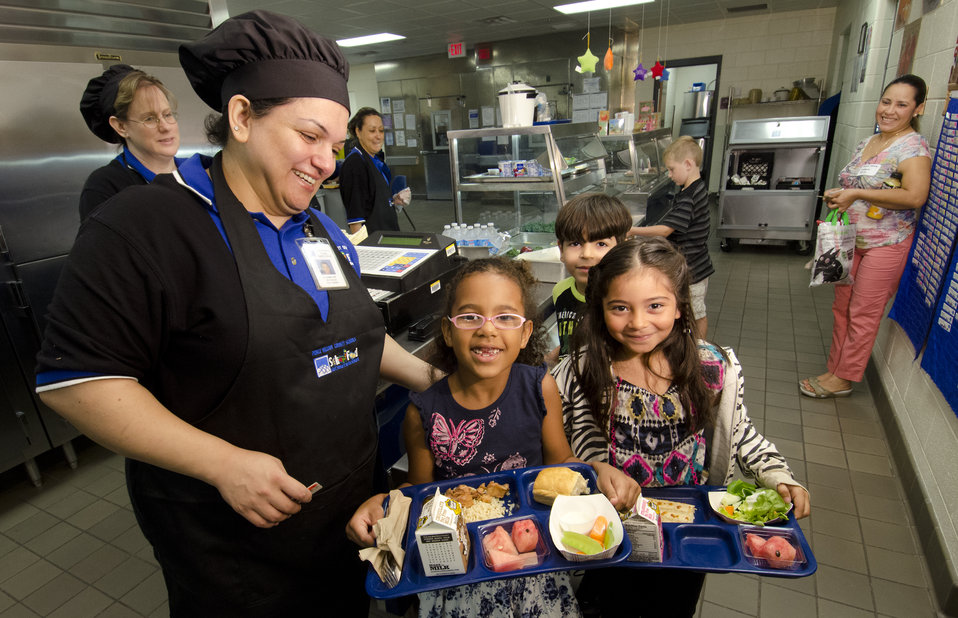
School lunch staff and students enjoy the new school lunch menu created to meet the new standards at the Yorkshire Elementary School in Manassas, VA on Friday, Sept. 7, 2012.